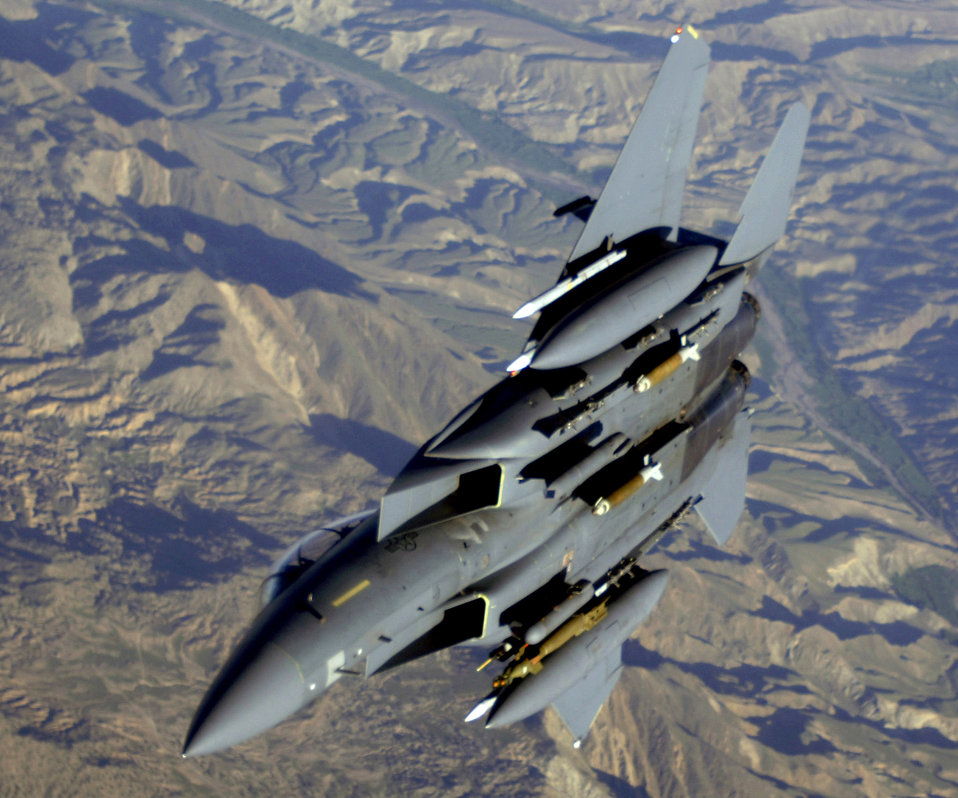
Sept. 10 airpower summary: F-15s strike enemy

An Air Force F-15E Strike Eagle aircraft flies over Afghanistan. Air Force F-15, A-10 Thunderbolt II and B-52 Stratofortress aircraft are providing close-air support to troops on the ground engaged in rooting out insurgent sanctuaries and support networks.